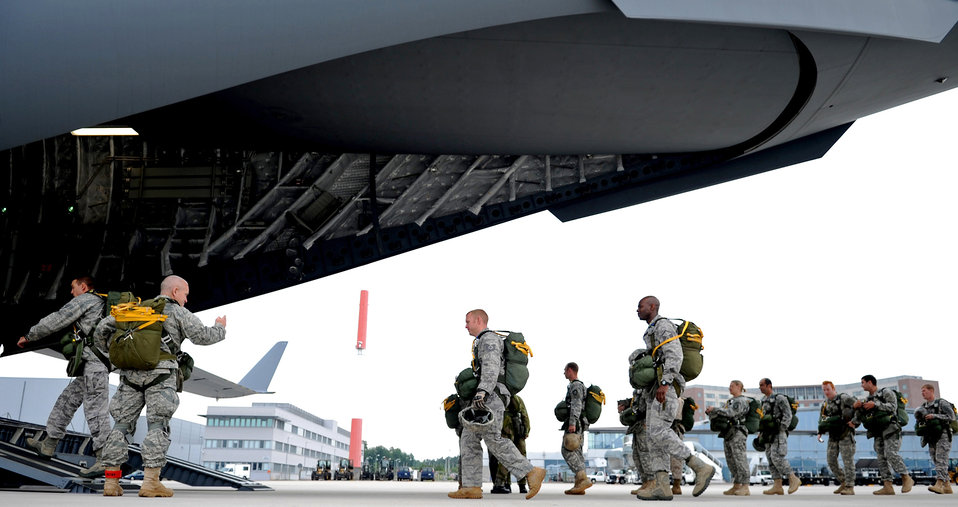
Ramstein Airmen participate in NATO jump

U.S. Air Force Airmen and U.S. Army Soldiers board a C-17 Globemaster III at Ramstein Air Base, Germany, for an airborne jump June 14, 2010. Five NATO countries participated in the annual event to support one of U. S. Air Forces in Europe's top priorities, building partnerships.